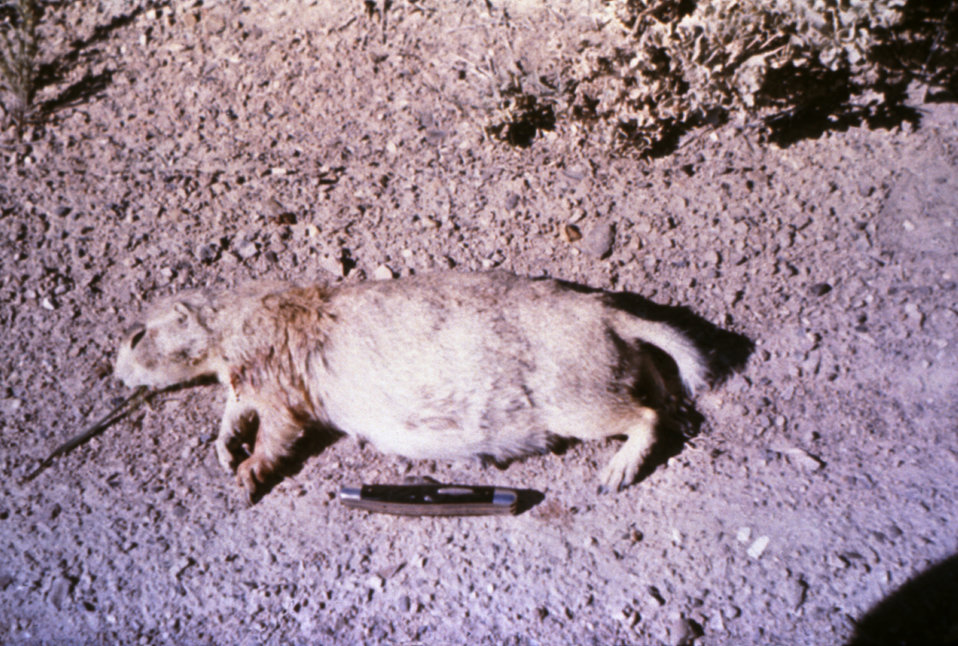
This photograph shows a prairie dog that died due to a Yersinia pestis plague infection.